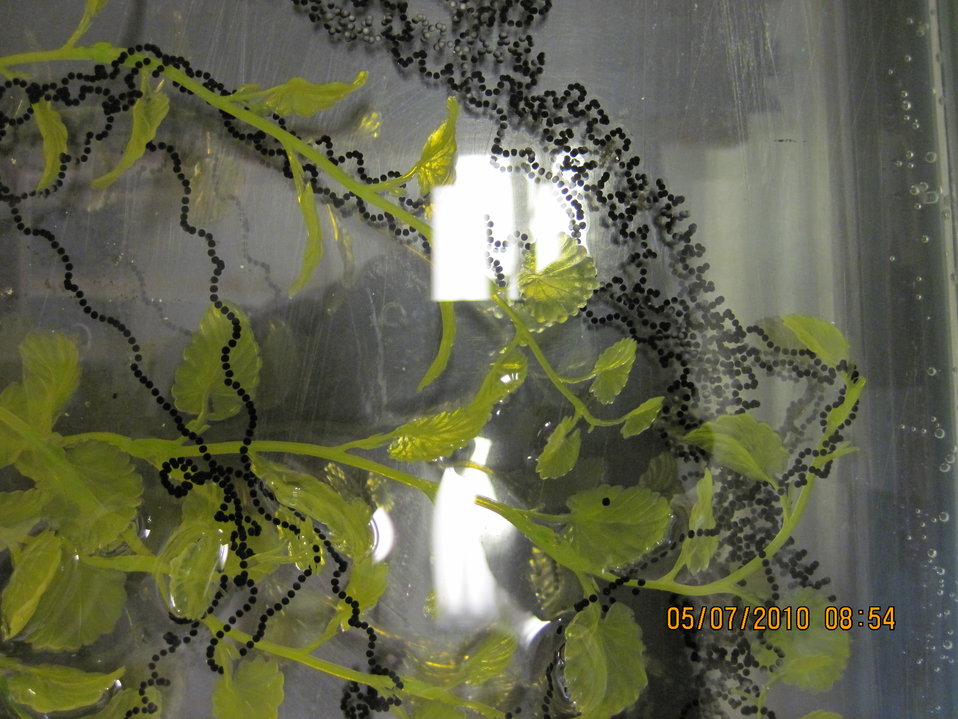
Tadpoles

Wyoming tadpoles at Saratoga National Fish Hatchery.